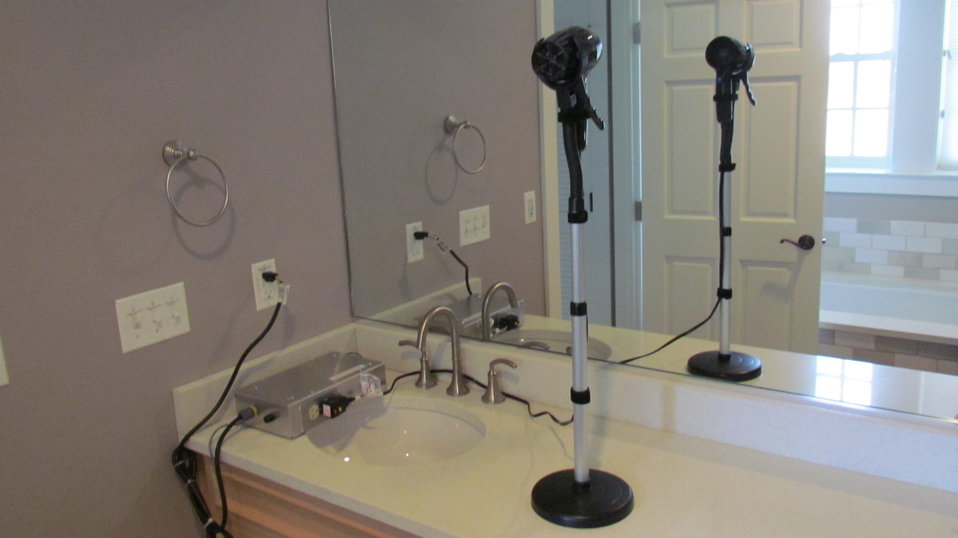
Computer controlled hair dryer in master bathroom.